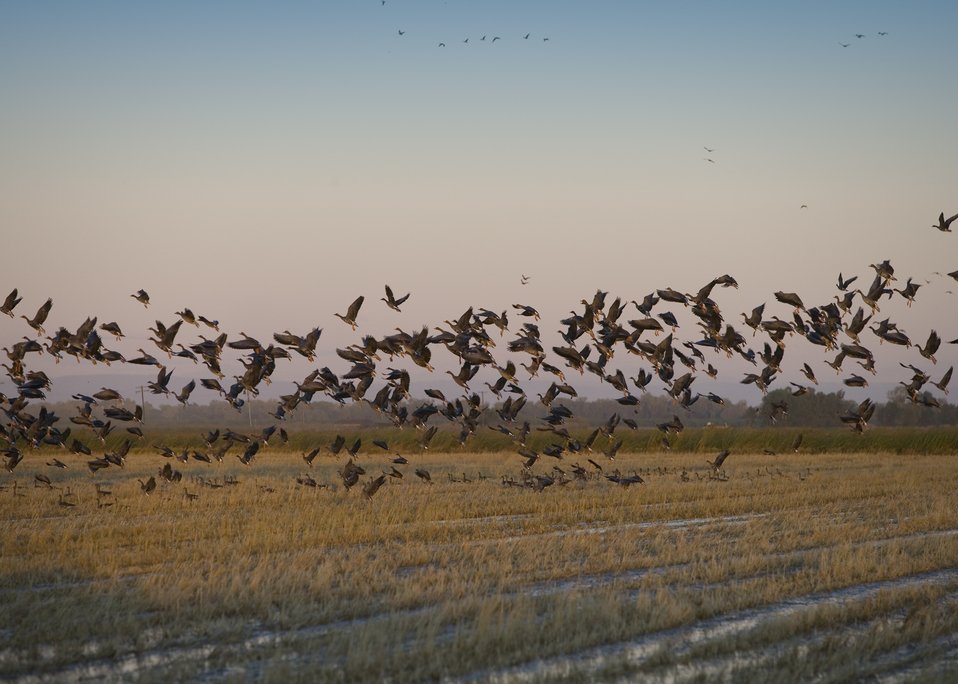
Geese flying off a rice field in Sacramento Valley, California.